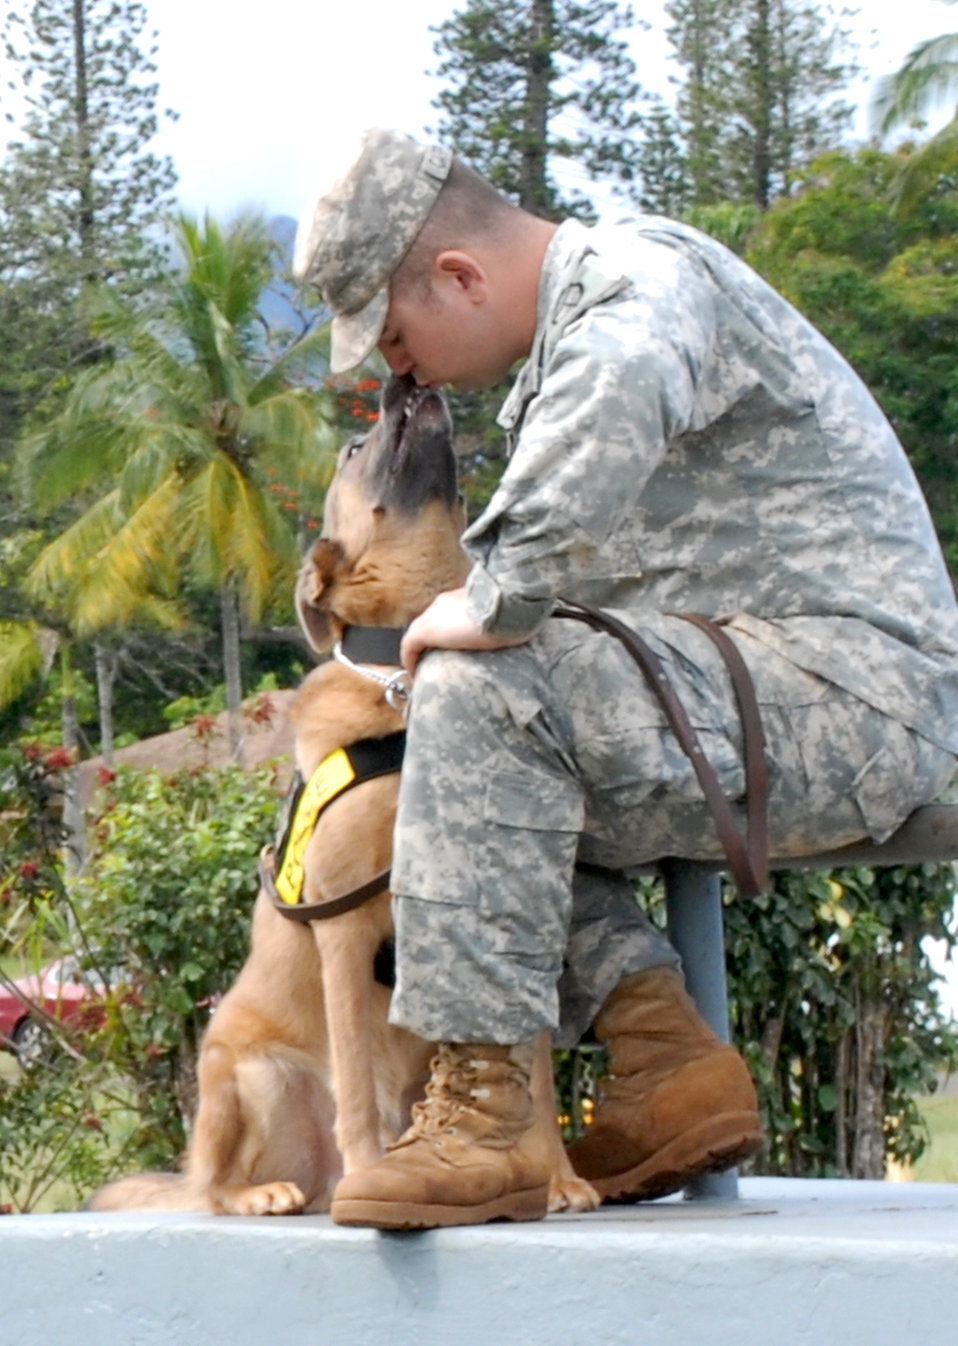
MWD competition

Army Sergeant Noah Carpenter and his military working dog Bo enjoy a quiet moment between events of the 2010 Hawaiian Islands Working Dog Competition Nov. 19, 2010, at Schofield Barracks, Hawaii. Sergeant Carpenter and Bo are assigned to the 13th Military Police Detachment at Schofield Barracks.